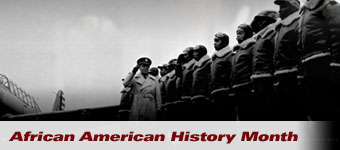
African American History Month

Photo illustration for African American History month